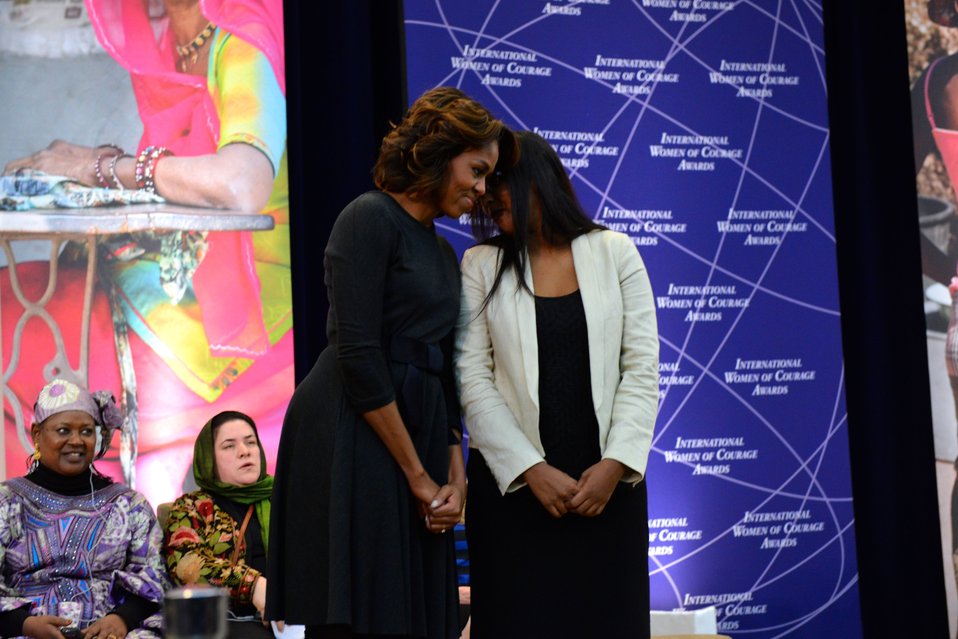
First Lady Michelle Obama With 2014 IWOC Awardee Roshika Deo

First Lady Michelle Obama speaks with 2014 Secretary of State’s International Women of Courage Awardee Roshika Deo, a Feminist and Political Activist for the Be the Change Campaign in Fiji, at the U.S. Department of State in Washington, D.C., on March 4, 2014.